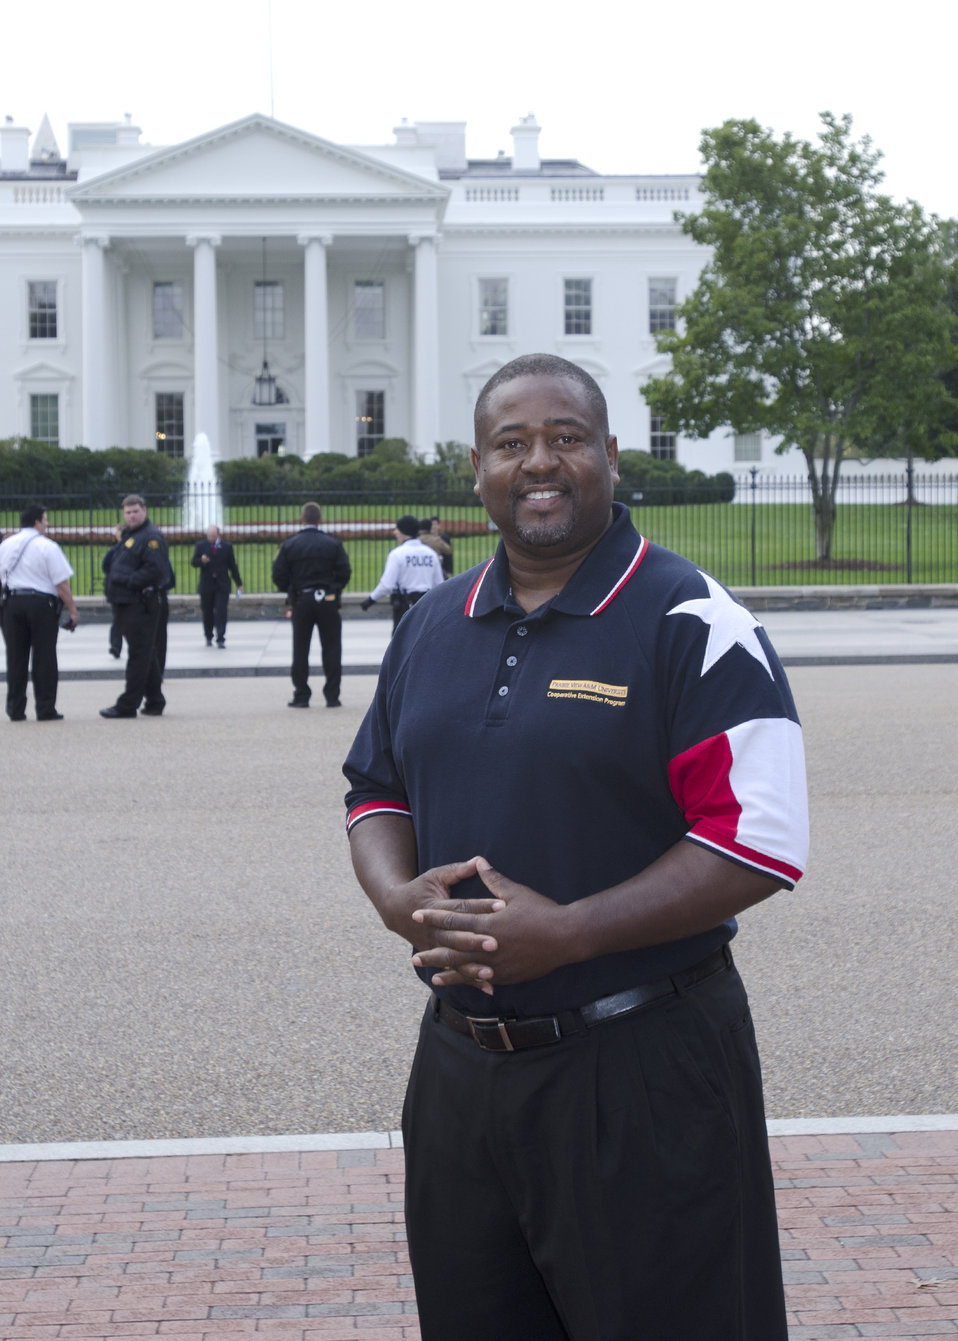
Champion of Change recipient Dr. Samuel Roberson Sr. in front of the White House in Washington, D.C. on Tuesday, Oct. 9, 2012. Dr. Roberson is a Program Specialist, 4-H & Youth Development at Prairie View A&M University Cooperative Extension Program in Texas. Dr. Roberson has actively volunteered in his community for close to 28 years. Roberson’s community work includes youth coaching, school volunteer, cultural arts board member, Juneteenth and Kwanzaa community celebration chair, NAACP member, bone marrow donor recruitment, and 8 years of service as Community Services Commissioner. Dr. Roberson’s role as a program specialist provides supportive research, programming and evaluation services to help Cooperative Extension 4-H programs succeed at impacting Texas youth with a primary emphasis on youth from limited resources backgrounds and minorities.